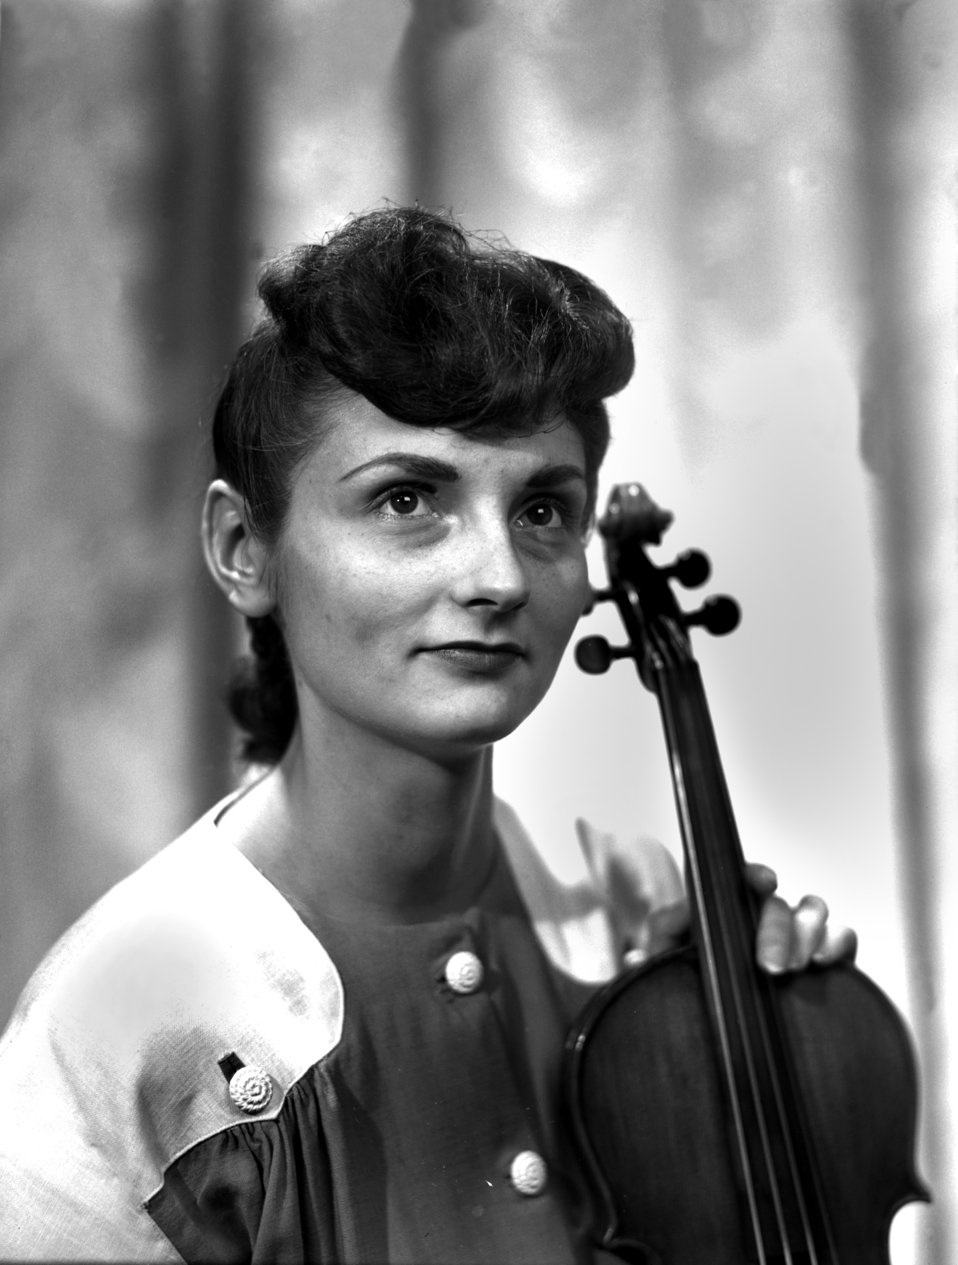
Ruth Sheatsley Oak Ridge Symphony

3244-1 DOE photo Ed Westcott 1-15-1947 Oak Ridge Tennessee